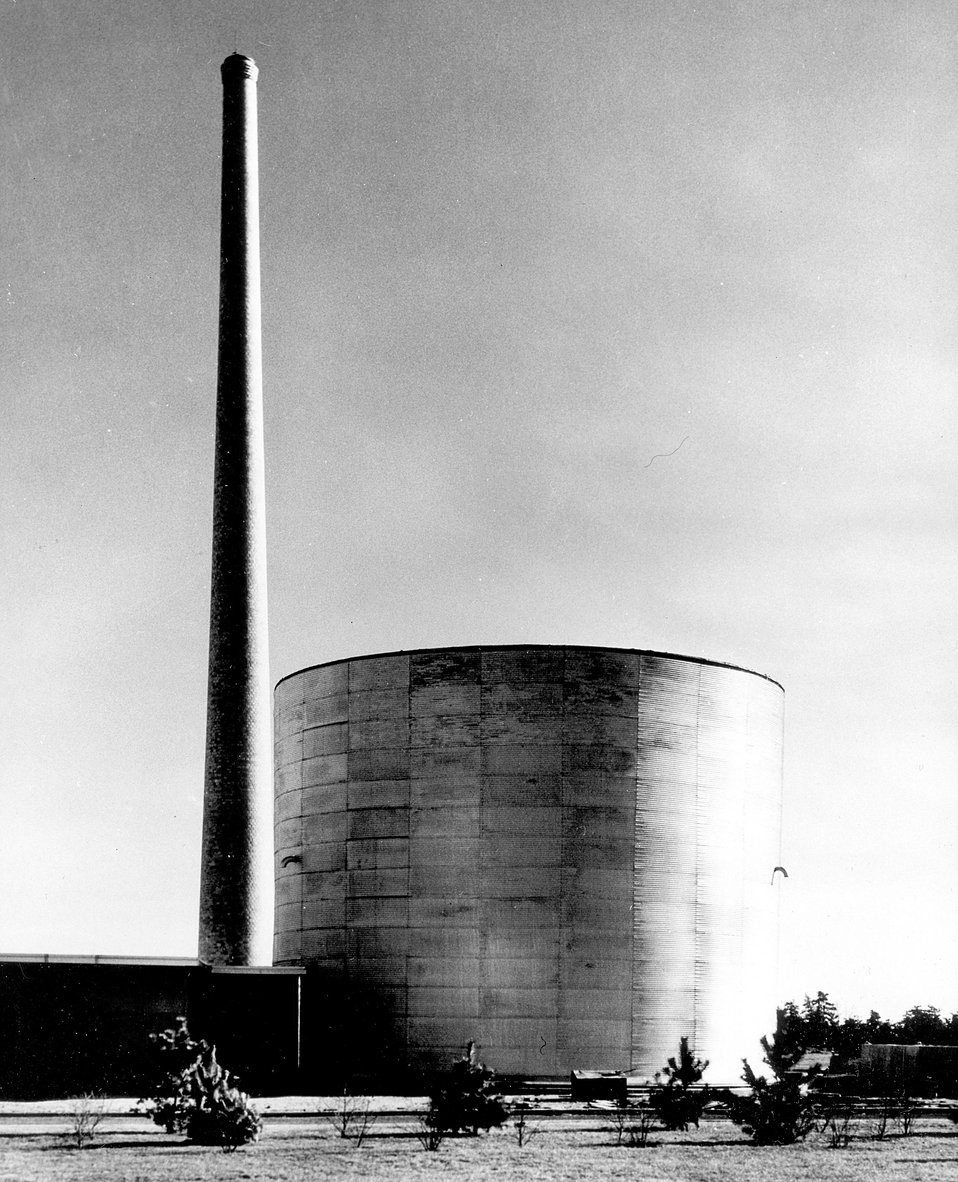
Cooling air for the reactor's graphite reflector is forced out of the 150-ft stack at the Medical research reactor building at Brookhaven.
c.1960